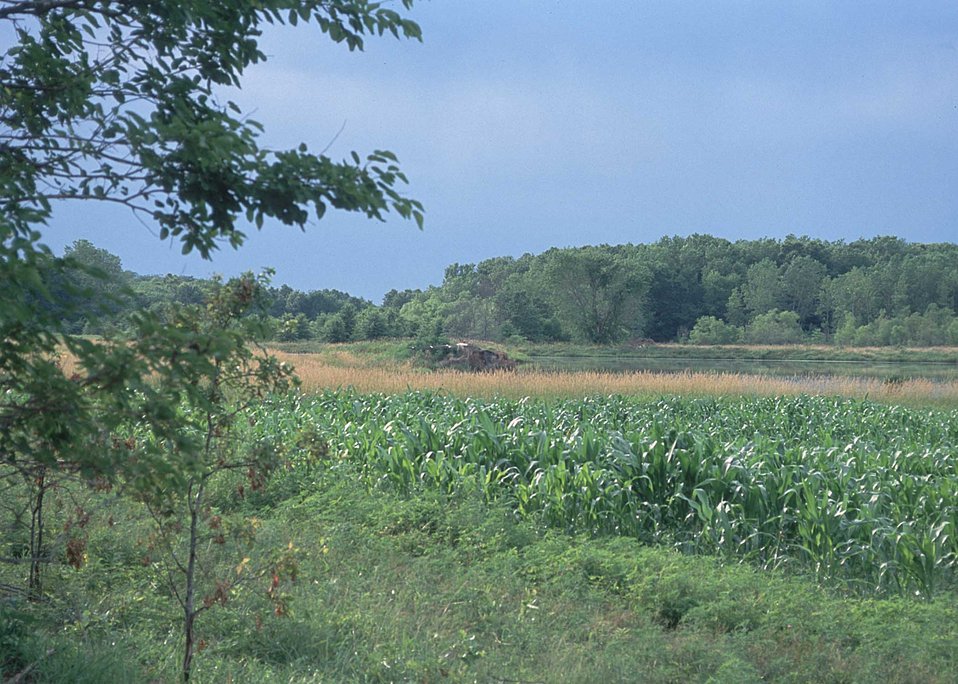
A corn food plot is well placed next to a wetland and bordered by grasses. Van Buren County SWCD, Iowa.